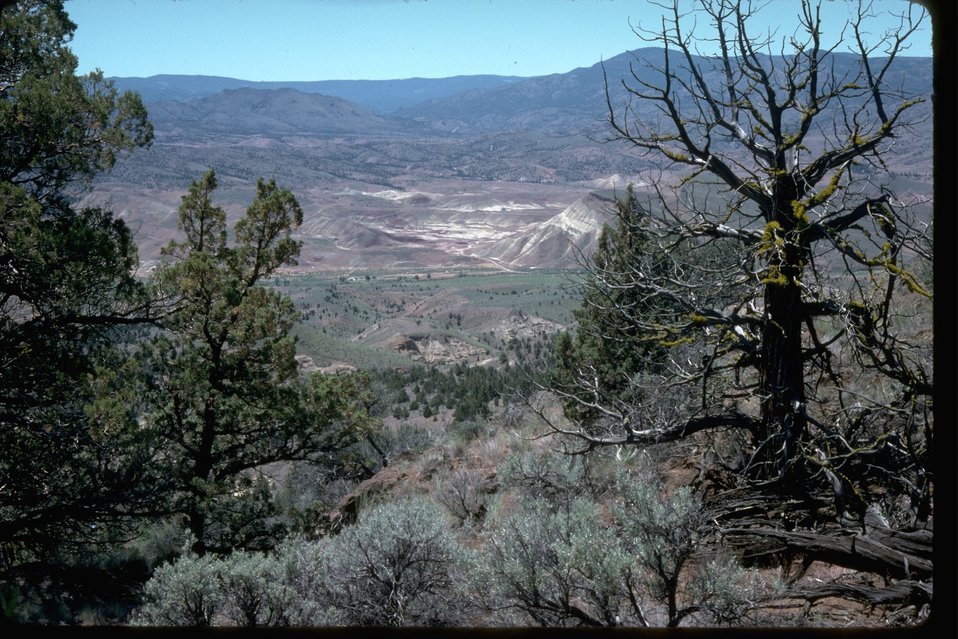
View of Bridge Creek Drainage area from Sutton Mountain.